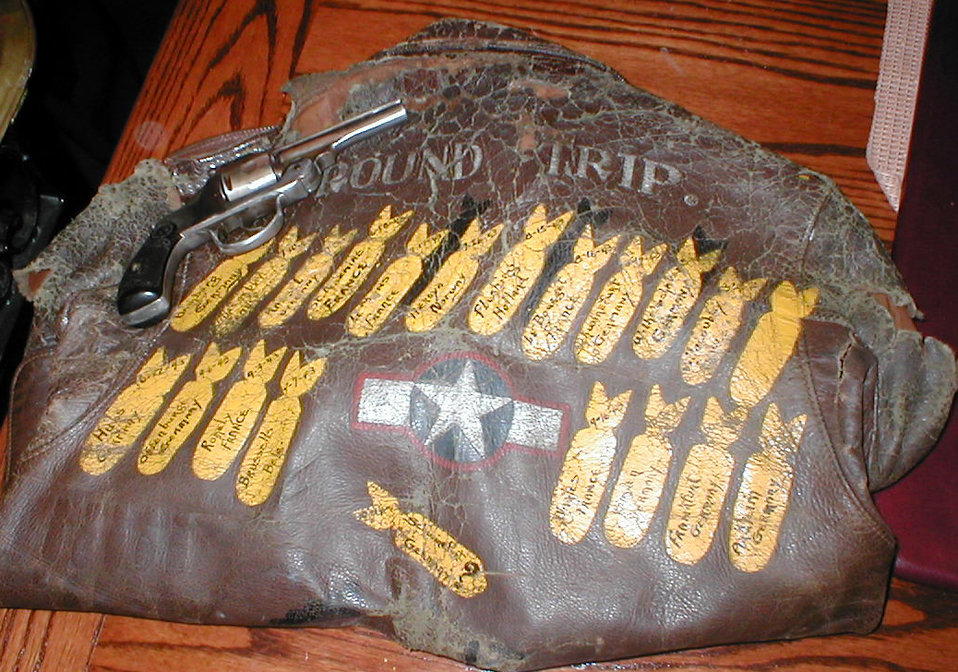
Family donates historic revolver to museum

LOS ANGELES (AFPN) -- Tech. Sgt. Paul Posti Sr.'s .38-claliber Smith and Wesson revolver and leather bomber jacket will soon be on display at the Air Force Museum at Wright-Patterson Air Force Base, Ohio.